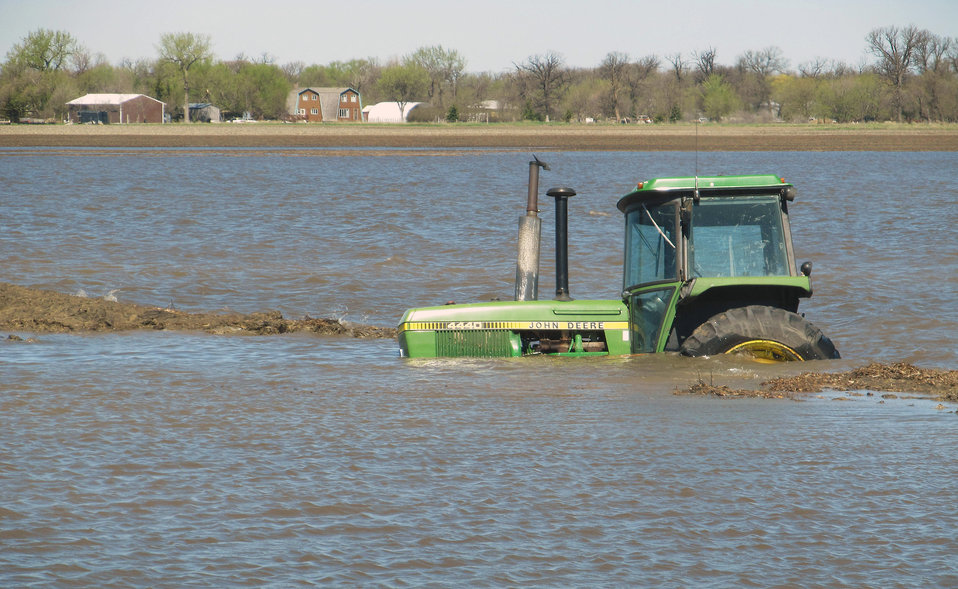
Flooding and water damage in the Park and Tongue River Watersheds located in Cavalier, Pembina and Cavalaier Counties in ND on Thursday, May 23, 2013.